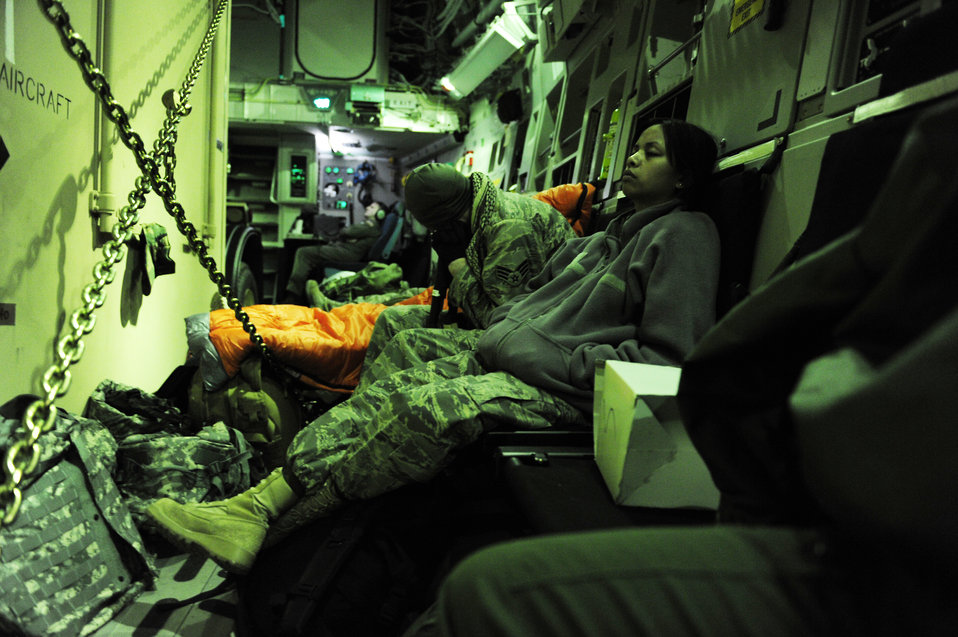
Haiti Relief Operations

Airmen with the 621st Contingency Response Wing at Joint Base McGuire-Dix-Lakehurst, N.J., catch a ride on a C-17 Globemaster III, Jan. 15, 2010, en route to Port-au-Prince, Haiti, in support of the ongoing relief efforts.